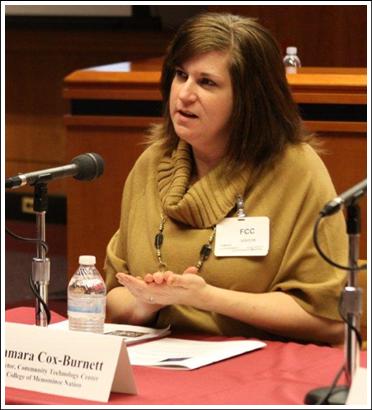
Tamara Cox-Burnett

Panel 3: Discussion of Best Practices Learned from Implementing Broadband Adoption Programs Within Different Communities